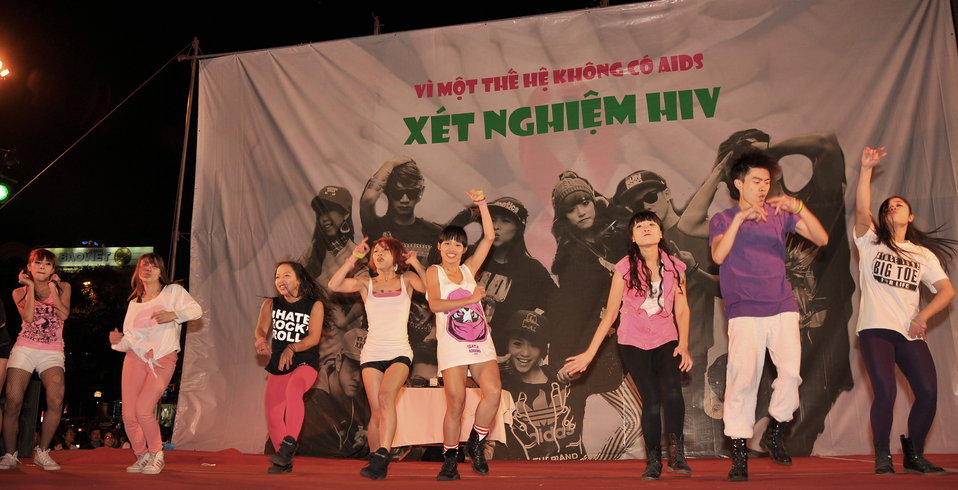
USAID and PEPFAR supports an outdoor concert to promote Vietnam's national action month for HIV

Hanoi, December 18, 2012.